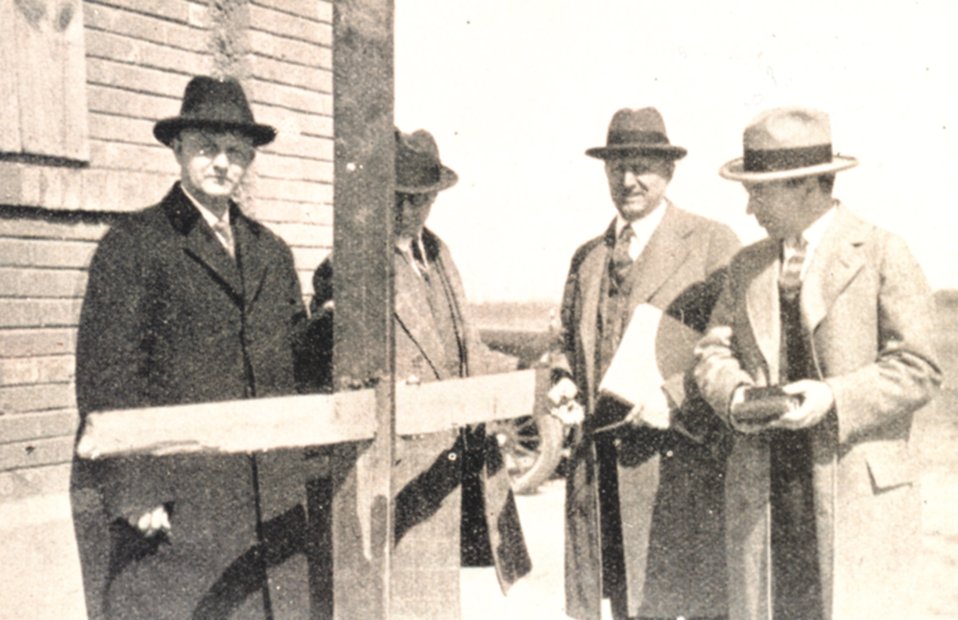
Engineering committee examining a 1X5 inch board which was driven through a 2X6 plank. Somewhere along the path of the Tri-State Tornado, the longest-lived and longest path of any recorded tornado. It traveled over 300 miles from SE Missouri to Indiana and killed over 600. In: Journal of the Western Society of Engineers, Vol. 30, No. 9. September, 1925.